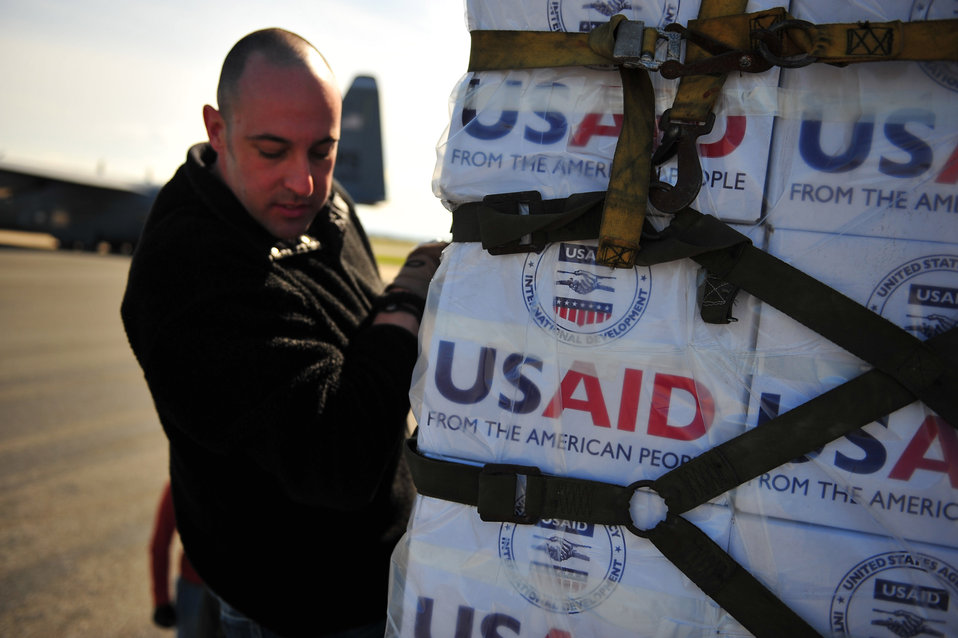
U.S. Airmen Load Blankets, Tarps, and Water Containers Onto Aircraft

U.S. Airmen, from the 435th Air Mobility Squadron out of Ramstein Air Base, load blankets, tarps, and water containers onto C-130 aircraft in Pisa, Italy, on March 4, 2011. These aircraft will then fly these supplies to Tunisia. The U.S. Government is working intensely with the International community to meet the humanitarian needs of the Lybian people and others in the country who fled across the borders. [Staff Sgt. Brendan Stephens photo/ U.S. Army photo]